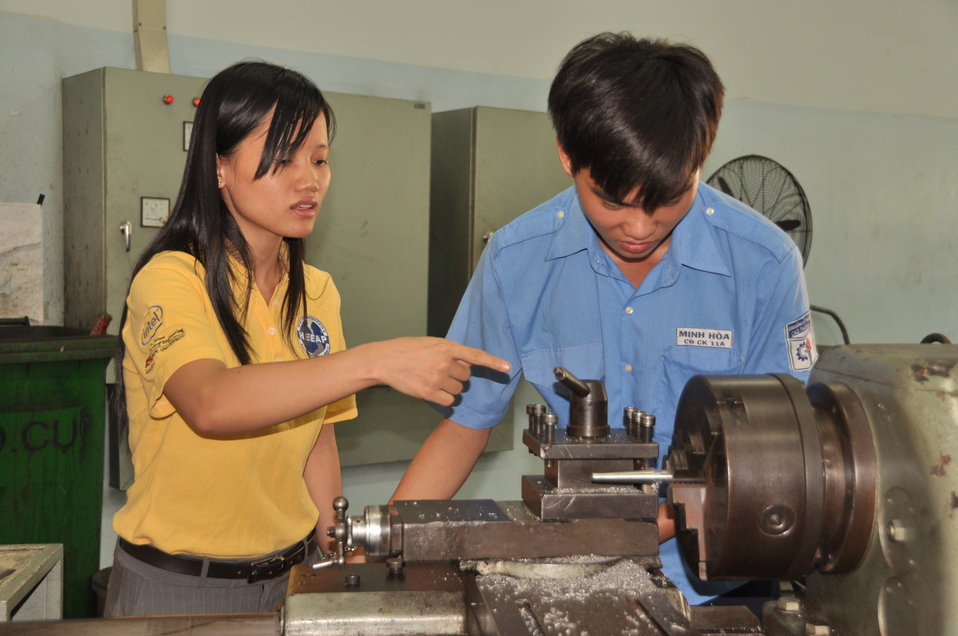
HEEAP Partner, Cao Thang Technical College

Ta Ngoc Y Thien, one of the faculty trained under the USAID-supported HEEAP program
Ho Chi Minh City, January 12, 2013